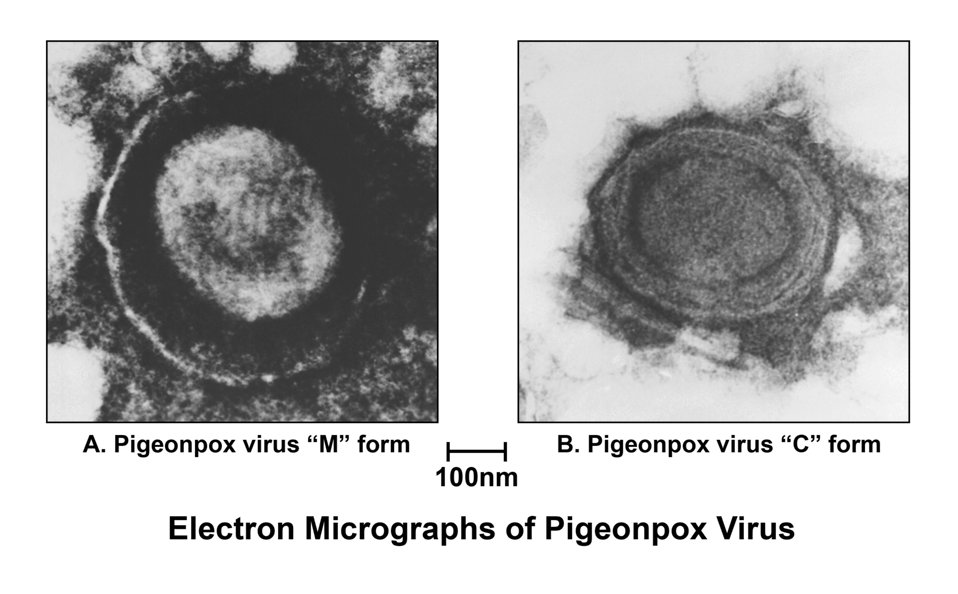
This negatively-stained transmission electron micrograph (TEM) revealed some of the morphologic differences seen between two pigeonpox virions. On the left, one sees the virion in its mulberry, or 'M' form, while the viron depicted at right shows morphology indicative of the organism's capsular, or 'C' form.